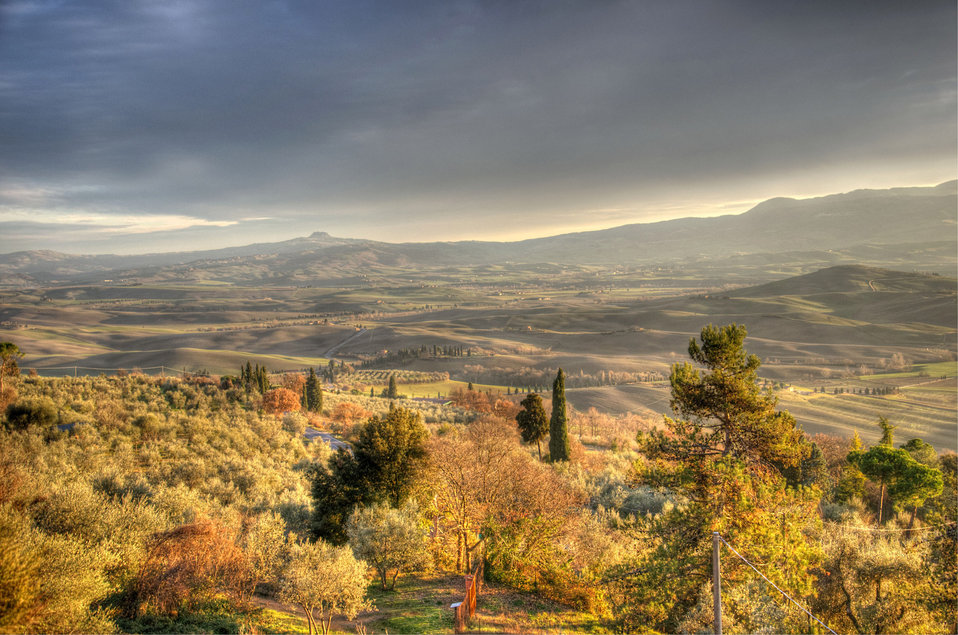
Valley

Tuscan landscape in hdr.